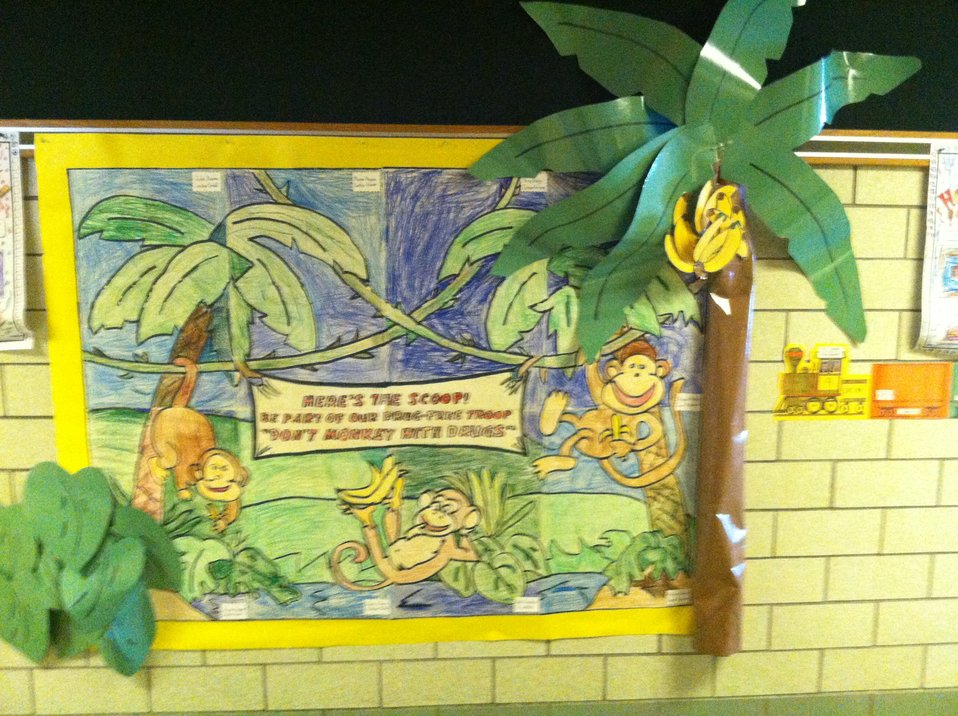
Poster Contest NDFW 2013

Alverton, Penn., Southmoreland Primary Center held a 'Jungle-themed' poster contest during its NDFW 2013 events.